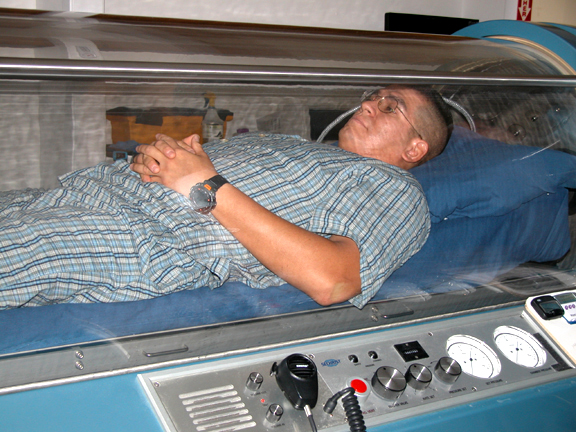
Hyperbaric-oxygen therapy

FORT WALTON BEACH, Fla. -- Staff Sgt. Hector Barrios receives hyperbaric-oxygen therapy to treat a foot injury he received while deployed supporting Operation Iraqi Freedom. Barrios is assigned to the 96th Security Forces working dog section here.